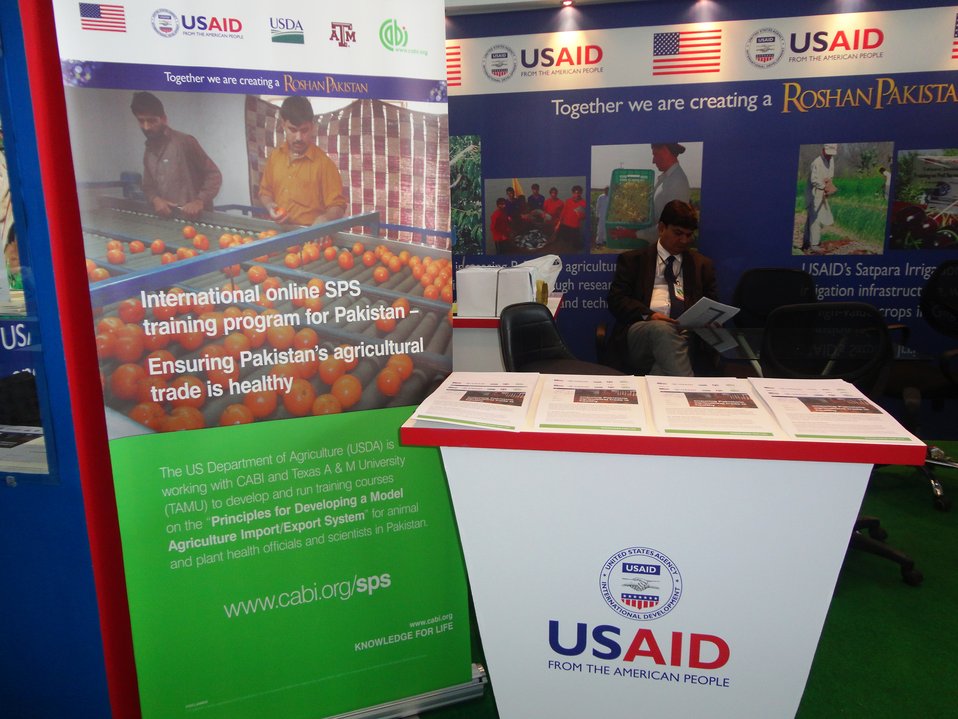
USDA SPS Project at the DAWN Sarsabaz Agri Expo

USDA SPS Project Stall at the Dawn Sarsabz Agri Expo.